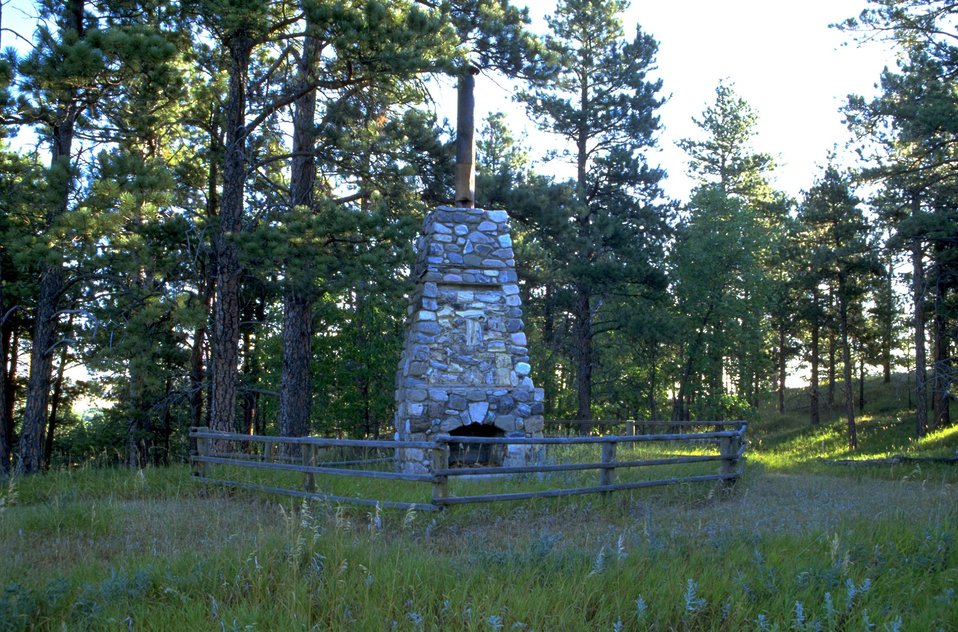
Camp Fechner, CCC Camp, Officer Quarters Chimney